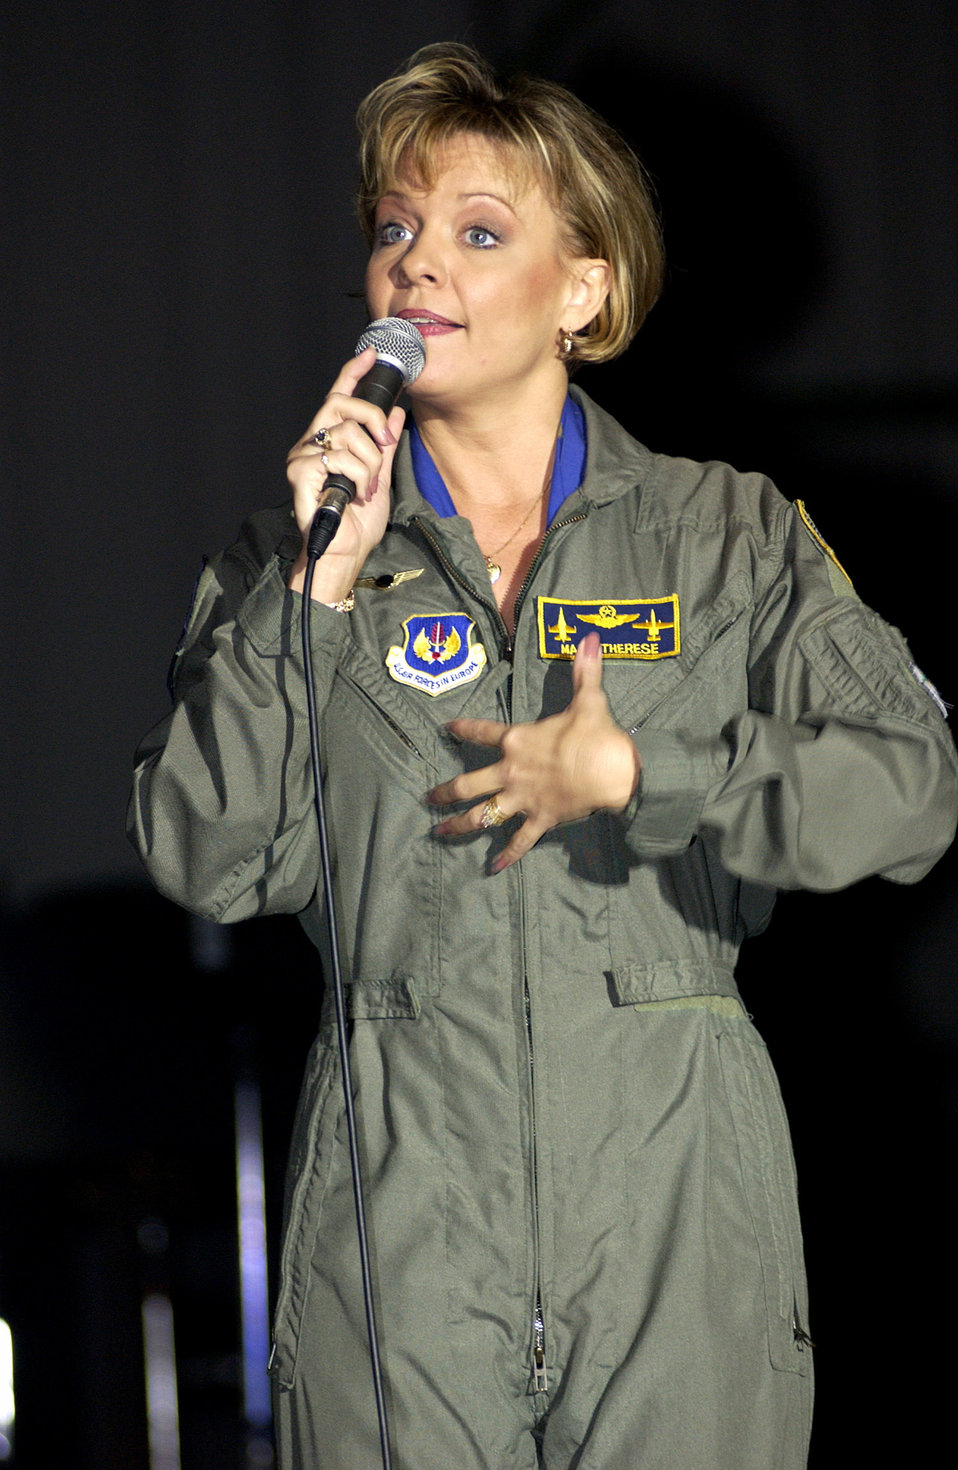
Operation Seasons Greetings

LAJES FIELD, Azores -- Mary Therese Tebbe thanks the crowd during a concert event here Nov. 18. Tebbe, country-music group Restless Heart, Comedian Andy Andrews and the New England Patriot Cheerleaders are touring Europe with the Air Force Reserve Band as part of a United Services Organizations holiday tour called Operation Seasons Greetings. Tebbe is an anchorwoman for a television station in Macon, Ga.